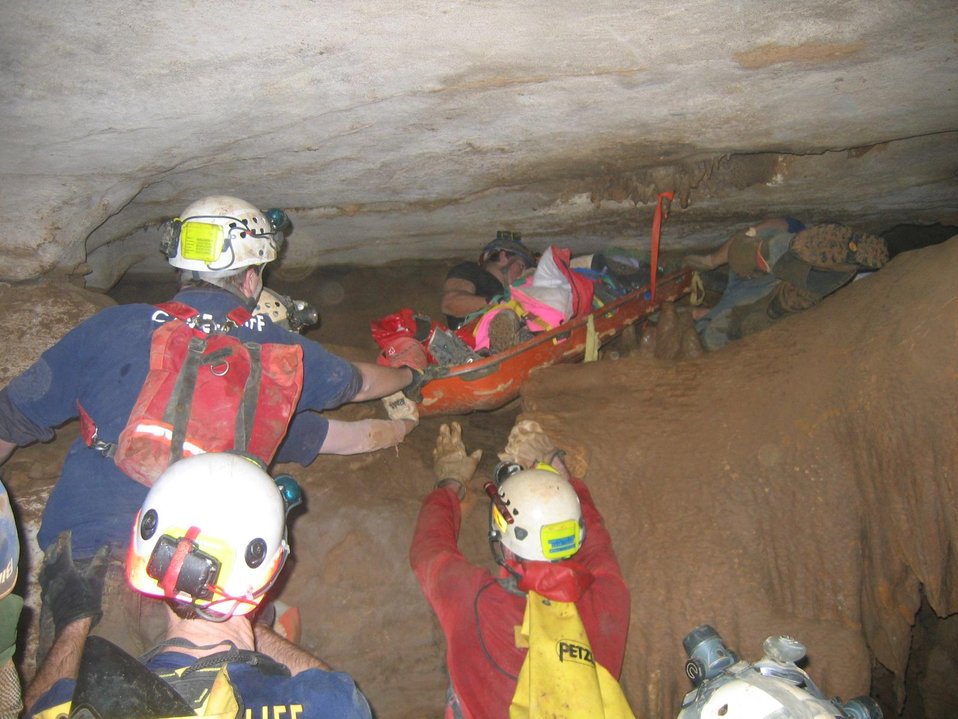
Members of the Chattanooga/Hamilton County Cave Team guide the patient into a low crawlspace.